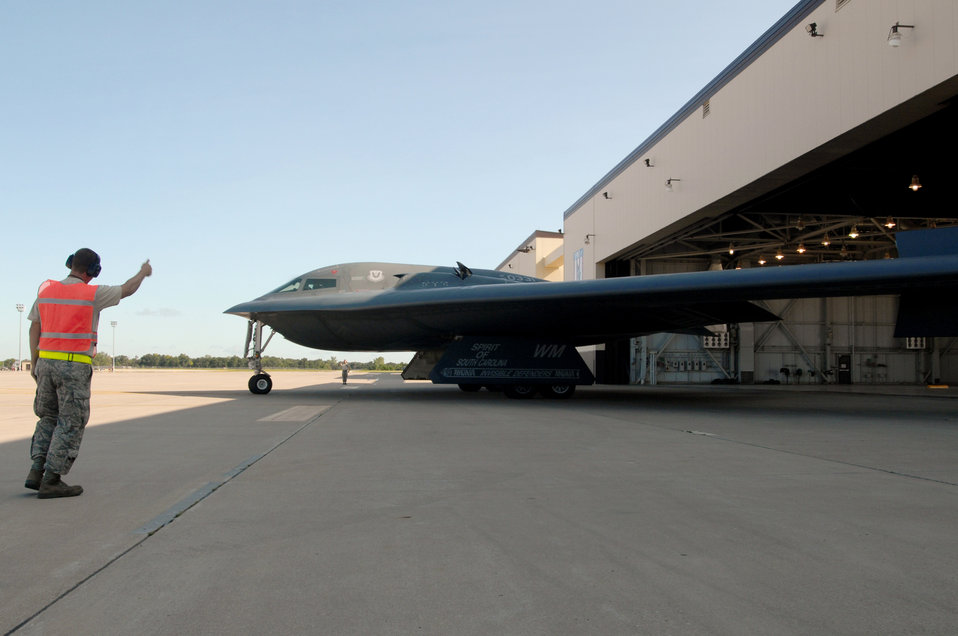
Ready for takeoff

Airman Kyle Joyner gives a